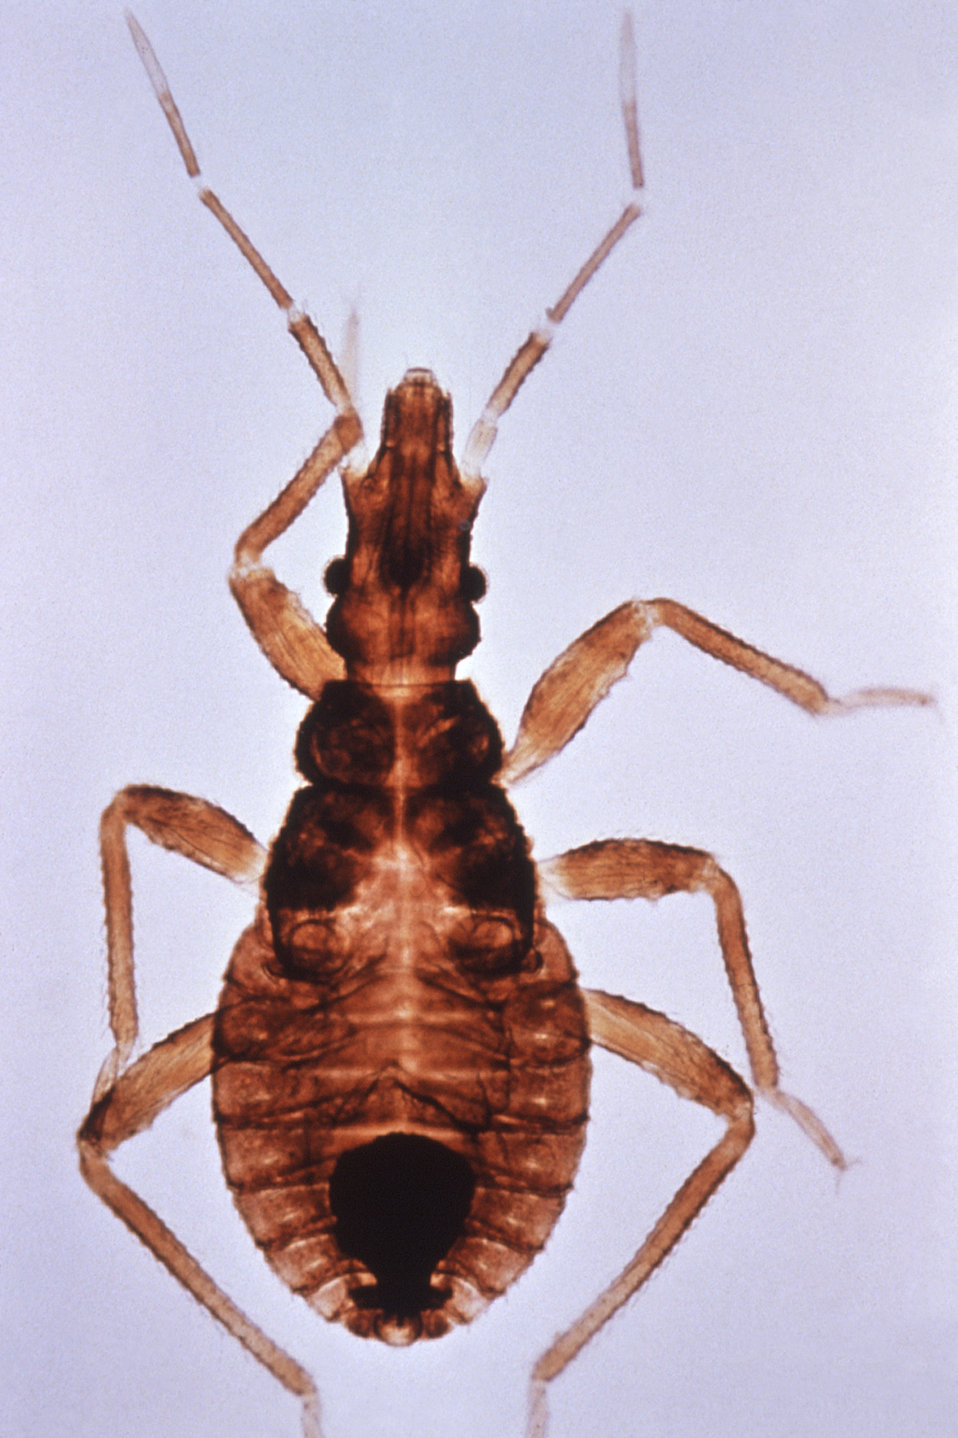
This is a dorsal view of the 'kissing bug', Triatoma infestans, a vector for Chagas disease, "American trypanosomiasis".